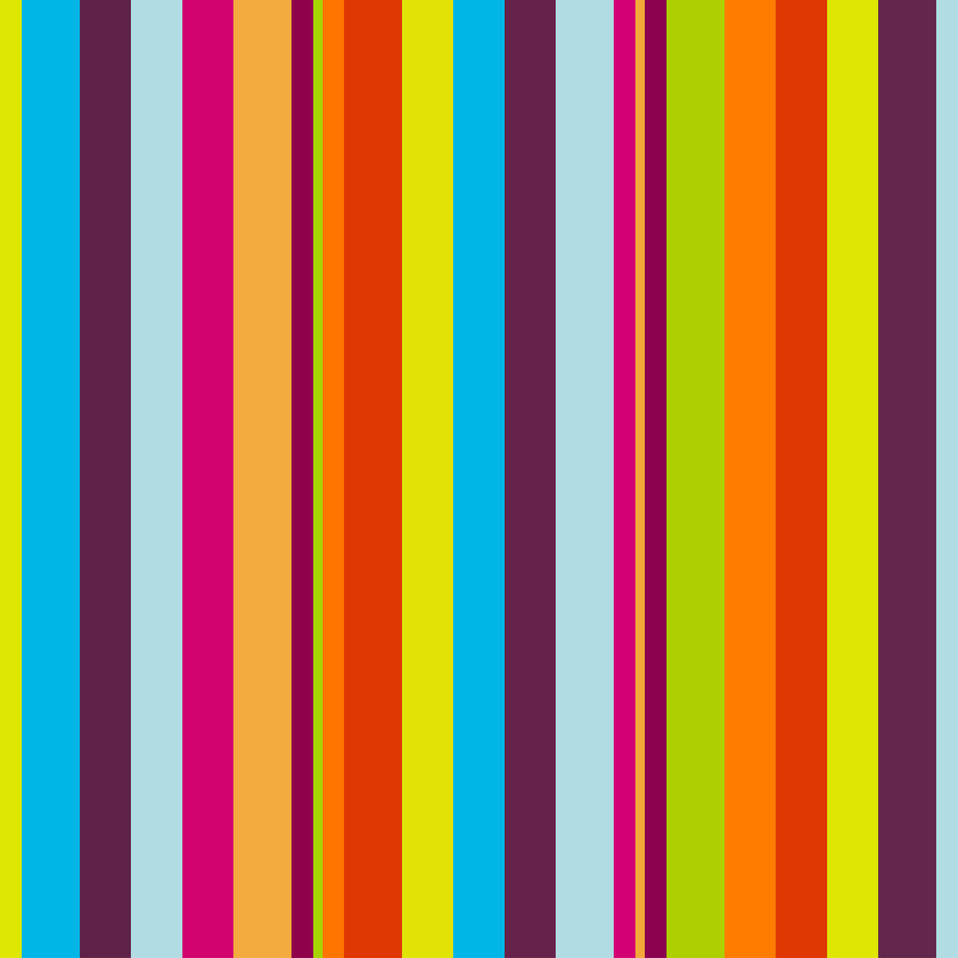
Stripes background colorful

Colorful striped background.